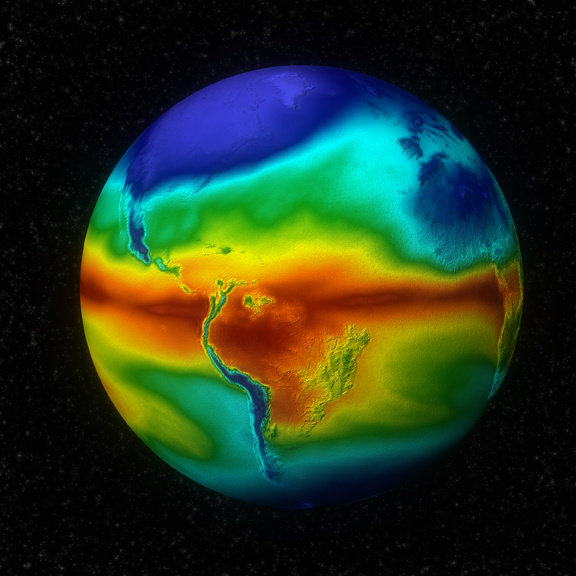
Distribution of atmospheric water vapor during Boreal winter, from an ultra-high resolution climate simulation.